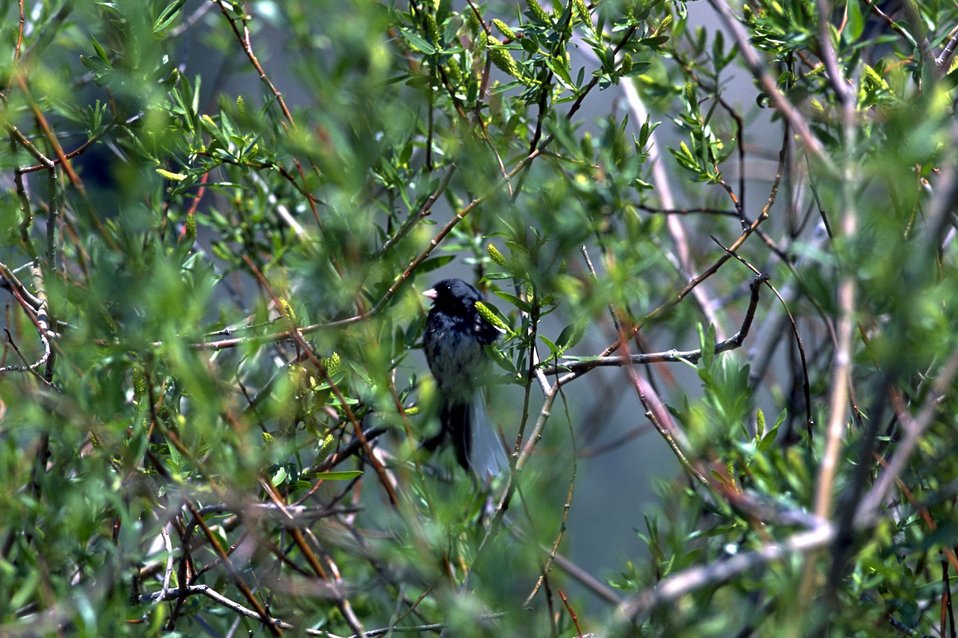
Bird in brush in the Big Hole Valley